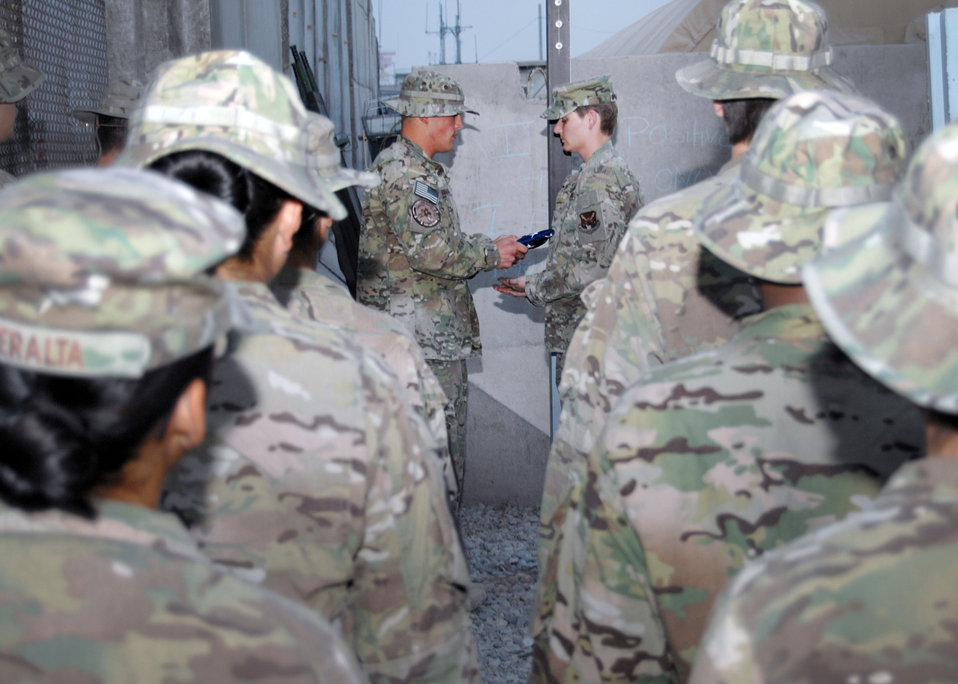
Raising the Flag

Staff Sgt. Michael Newman presents the flag to Staff Sgt. Kristy Wolfmayer, marking the end of retreat at Kandhar Airfield, Afghanistan, Aug. 4, 2012. Wolfmayer's father, John Woflmayer from Califon, N.J., designed, built and shipped the flagpole to Kandahar Airfield. Newman and Wolfmayer are with the 651st Expeditionary Aeromedical Evacuation Squadron.